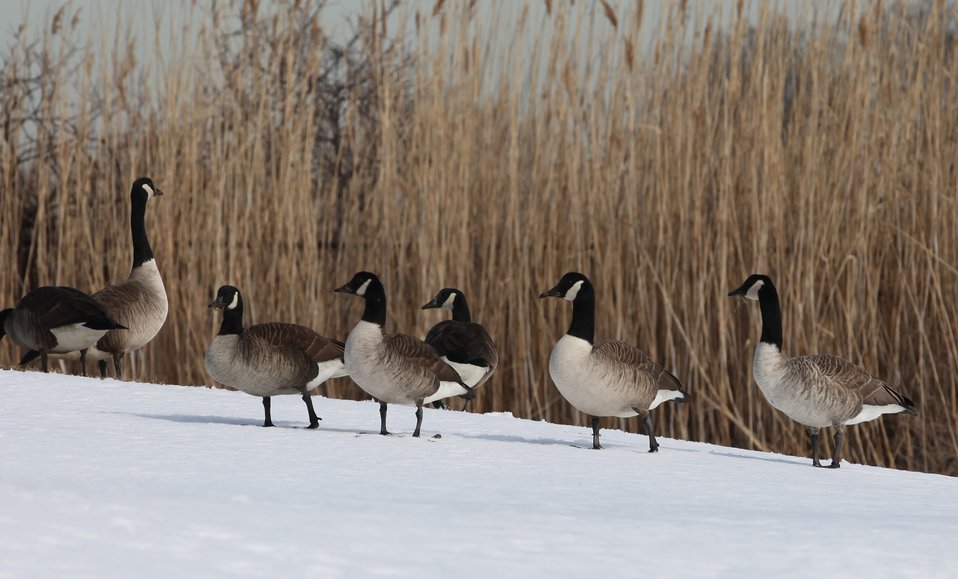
Canada Geese

Location: Lido Beach WMA, Long Island National Wildlife Refuge Complex.